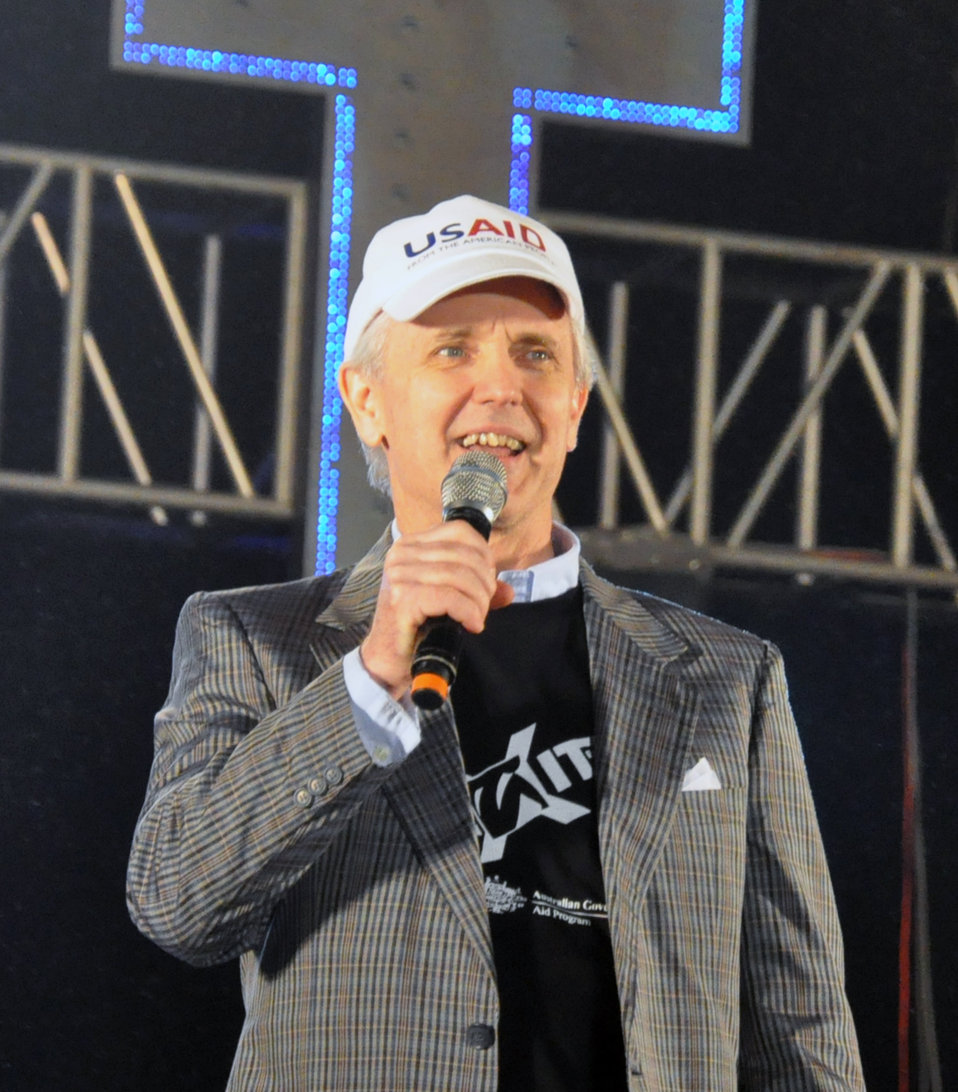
USAID Mission Director Frank Donovan speaks to the concert crowd in Ha Long Bay.